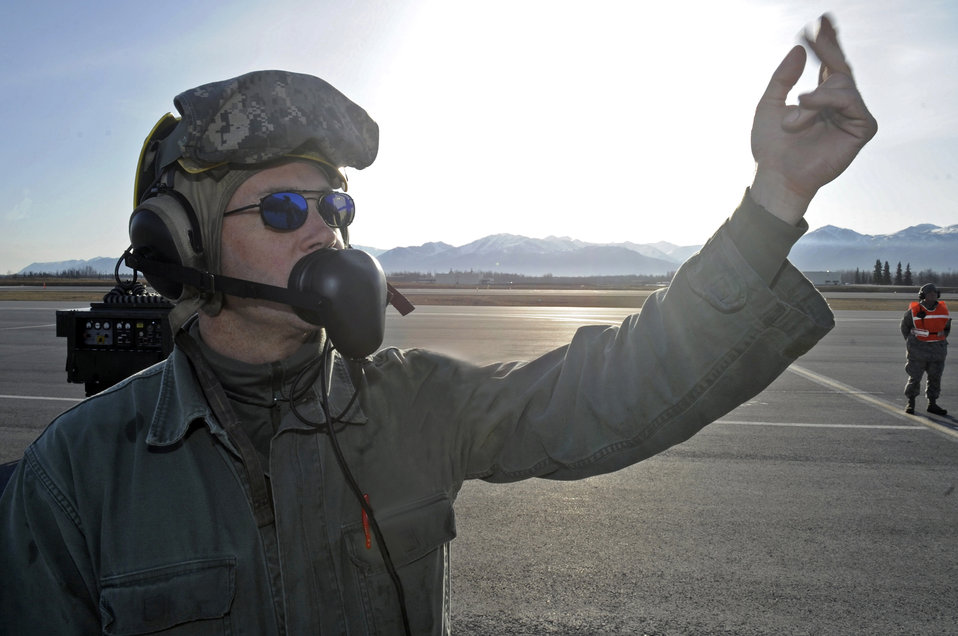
Maintainers keep Red Flag-Alaska jets flying

Tech. Sgt. Reginald Wagle, a crew chief with the 2nd Fighter Squadron at Tyndall Air Force Base, Fla., signals the pilot of his jet to begin taxiing for take off during Red Flag-Alaska April 28 at Elmendorf AFB, Alaska. This exercise enables flying squadrons to enhance their warfighting capabilities by flying simulated combat sorties in a realistic threat environment.